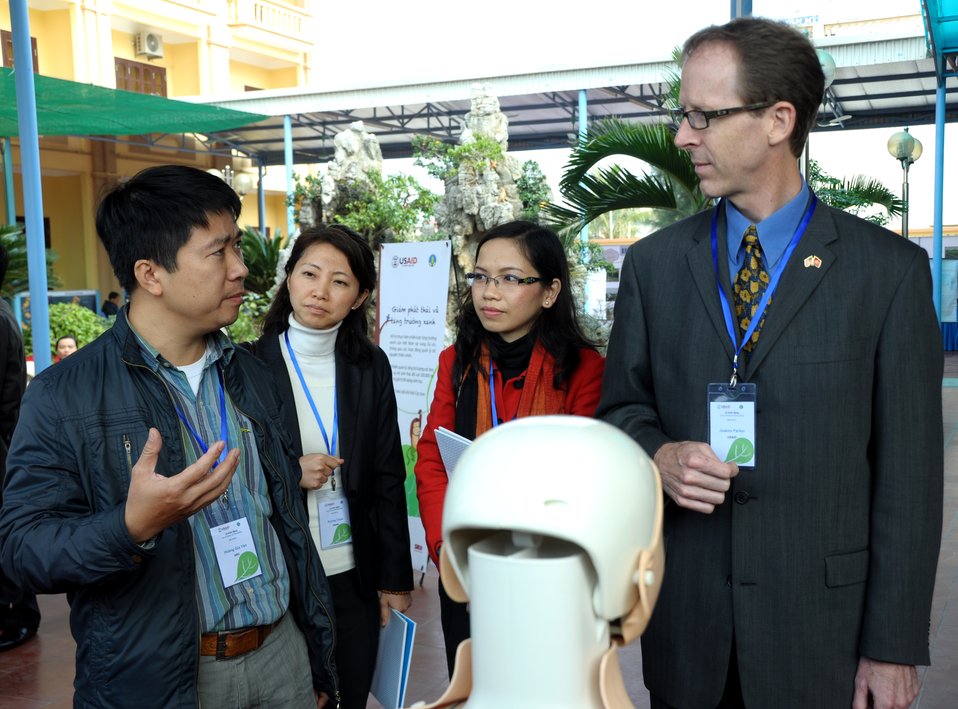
USAID launches the Vietnam Forests and Deltas project in Nam Dinh province.

Quat Lam, Nam Dinh. January 16, 2014.